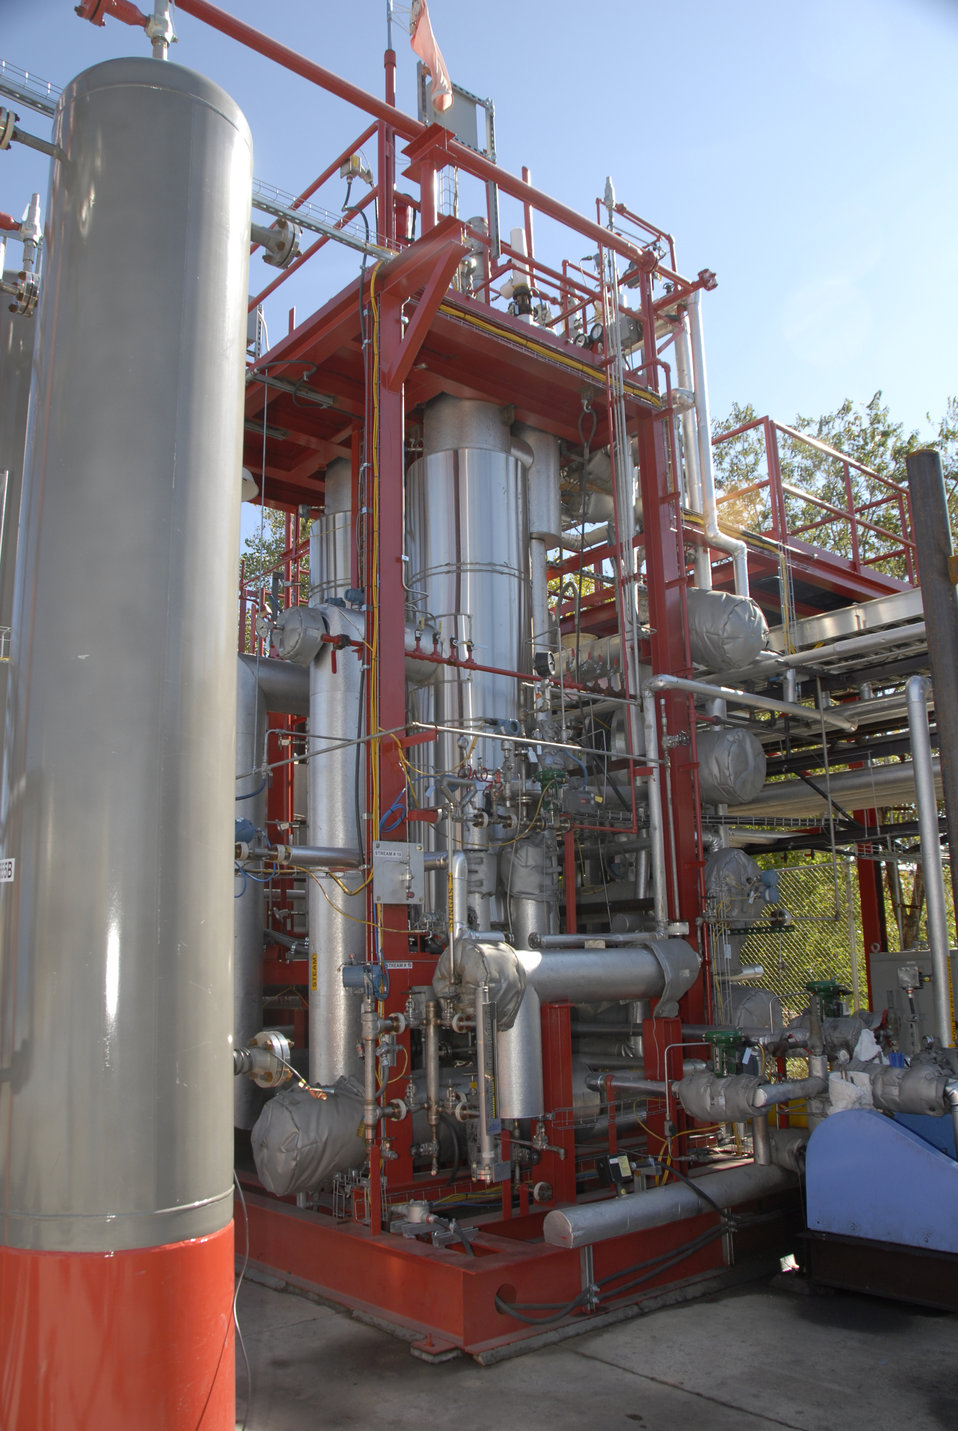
Wood chips are a possible source for cellulosic ethanol production at Range Fuels in Broomfield, Colorado on October 23, 2008. Cellulosic ethanol is a biofuel produced from wood, grasses, or the non-edible parts of plants. Wood chips and other cellulosic materials have several advantages in that they are abundant, they don't compete with food crops such as corn or soybean, and they result in far lower carbon-dioxide emissions.